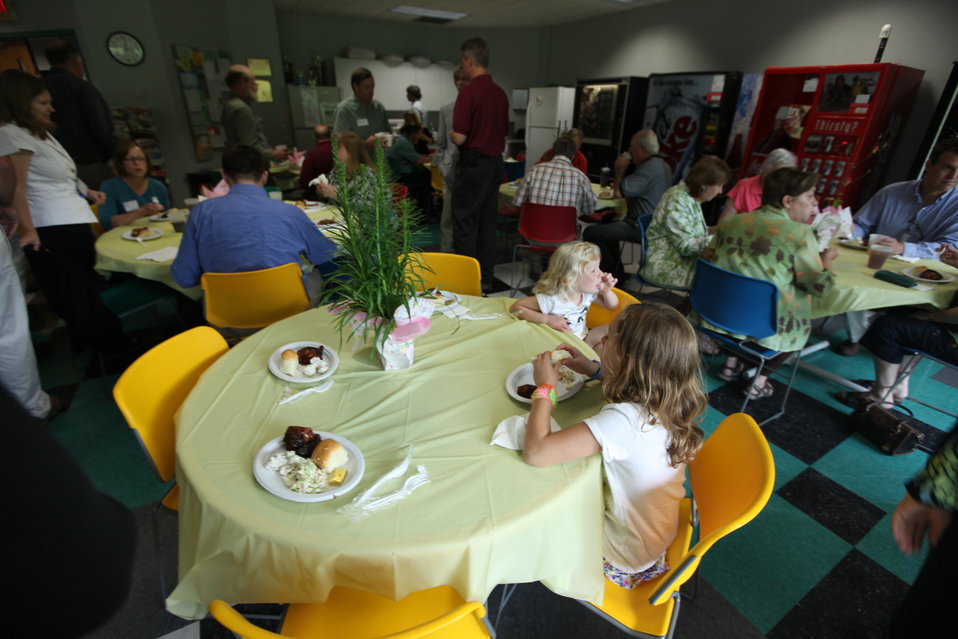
Northeast Region Employee Appreciation Awards

Luncheon